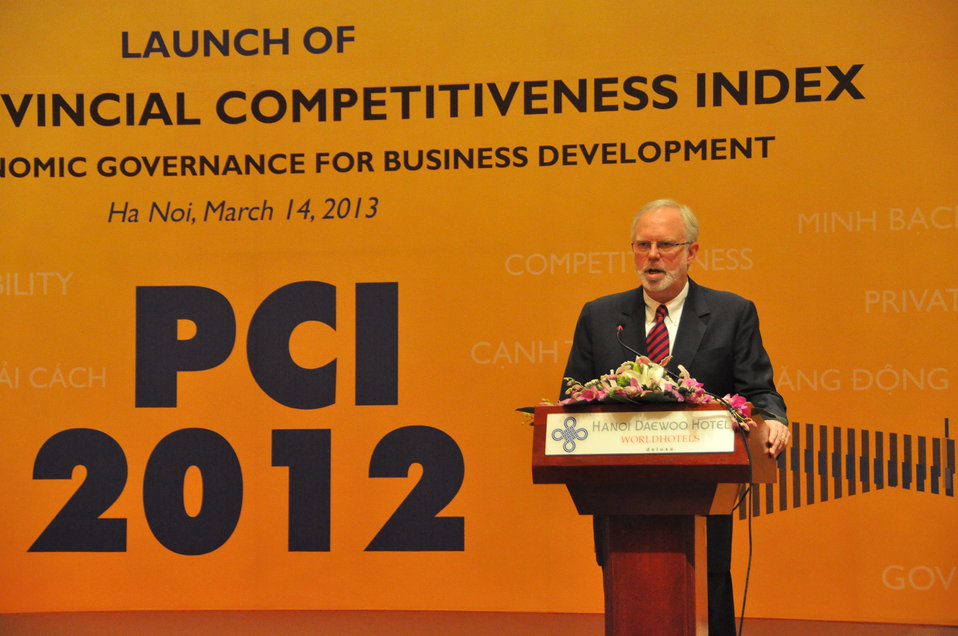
U.S. Ambassador David Shear speaks at the Provincial Competitiveness Index Launch, March 14, 2013

Hanoi, March 14, 2013